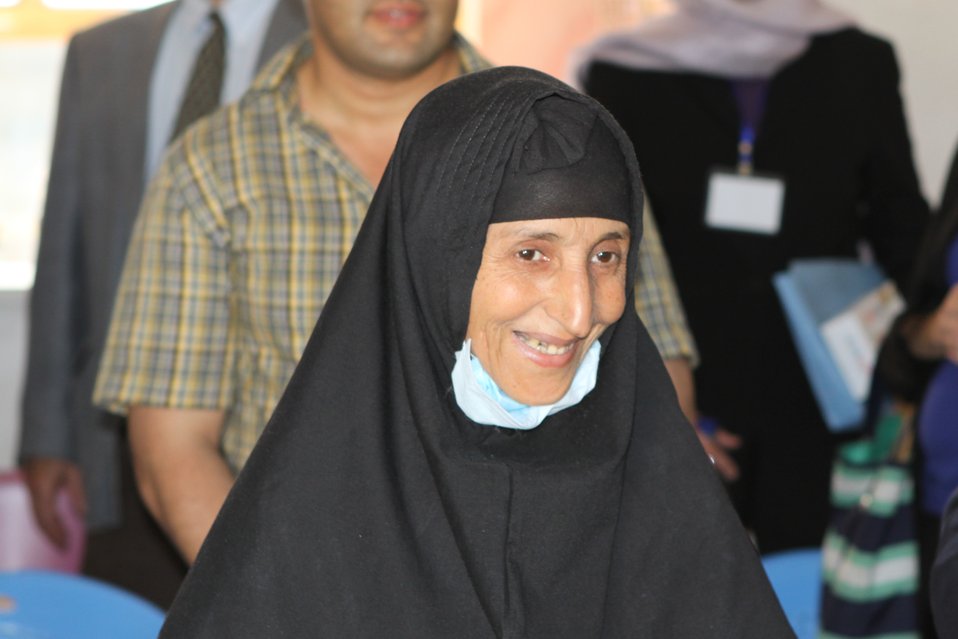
100525 Hirat Marble Conference 861